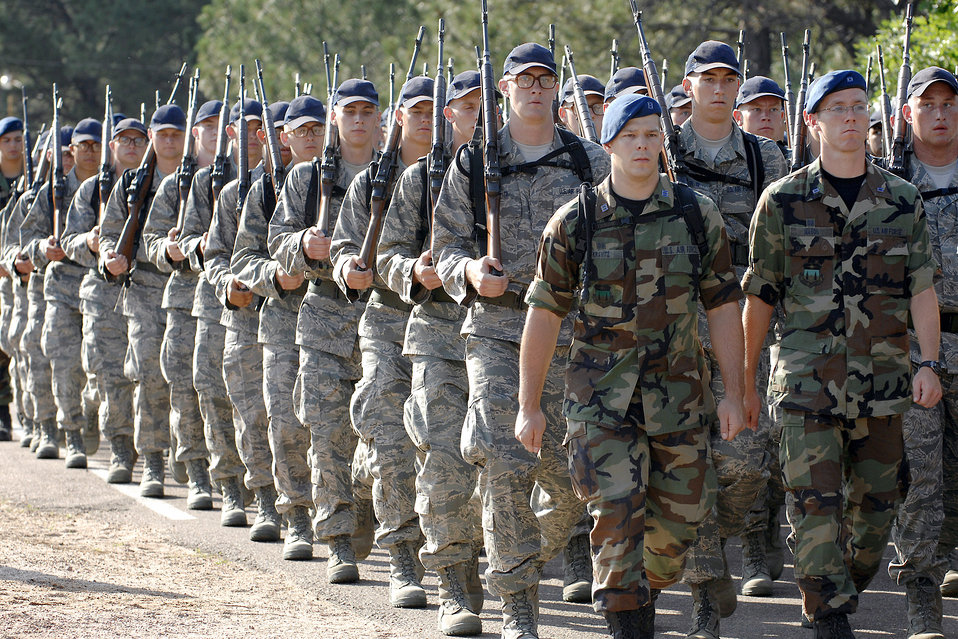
New cadets discover Jacks Valley

U.S. Air Force Academy basic cadets of the Class of 2012 march out to the Jacks Valley training area near Colorado Springs, Colo., July 14 to begin the field training portion of basic training.